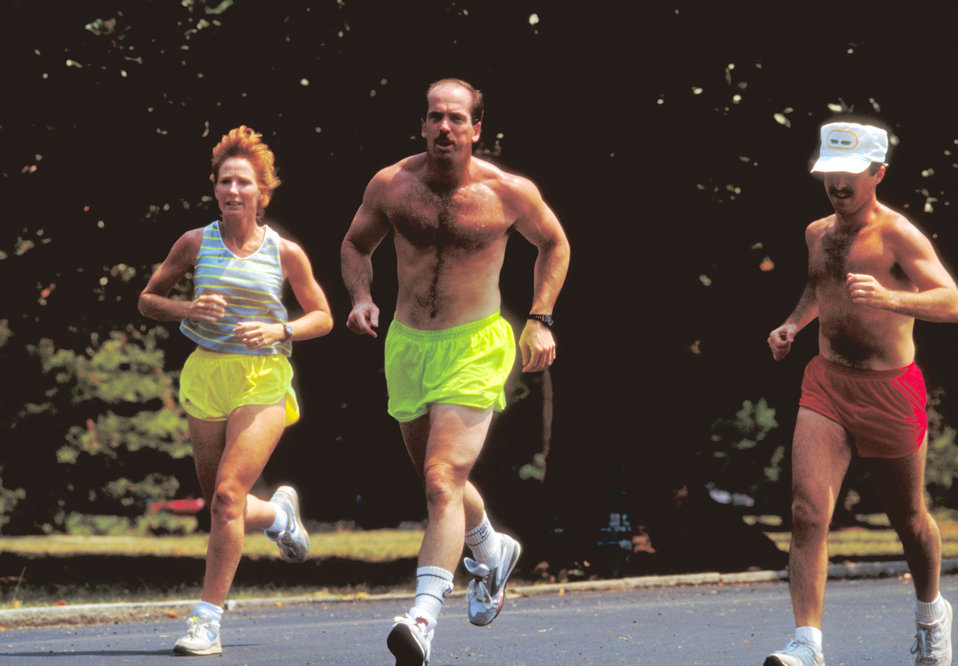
People running for fitness.